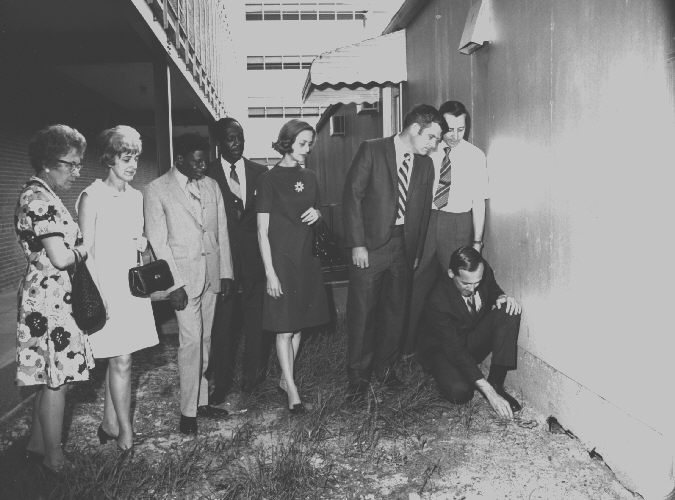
Rodent Control Practices